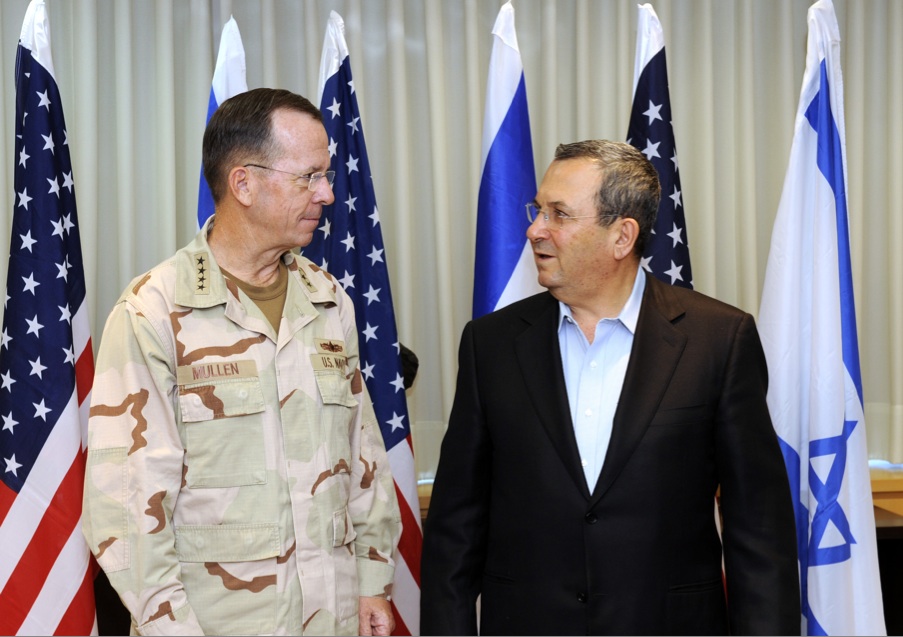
Admiral Mullen Speaks With Israeli Defense Minister Barak

Chairman of the Joint Chiefs of Staff Admiral Michael G. Mullen speaks with Israeli Defense Minister Ehud Barak before their meeting at the U.S. Embassy Tel Aviv in Israel on June 27, 2010.